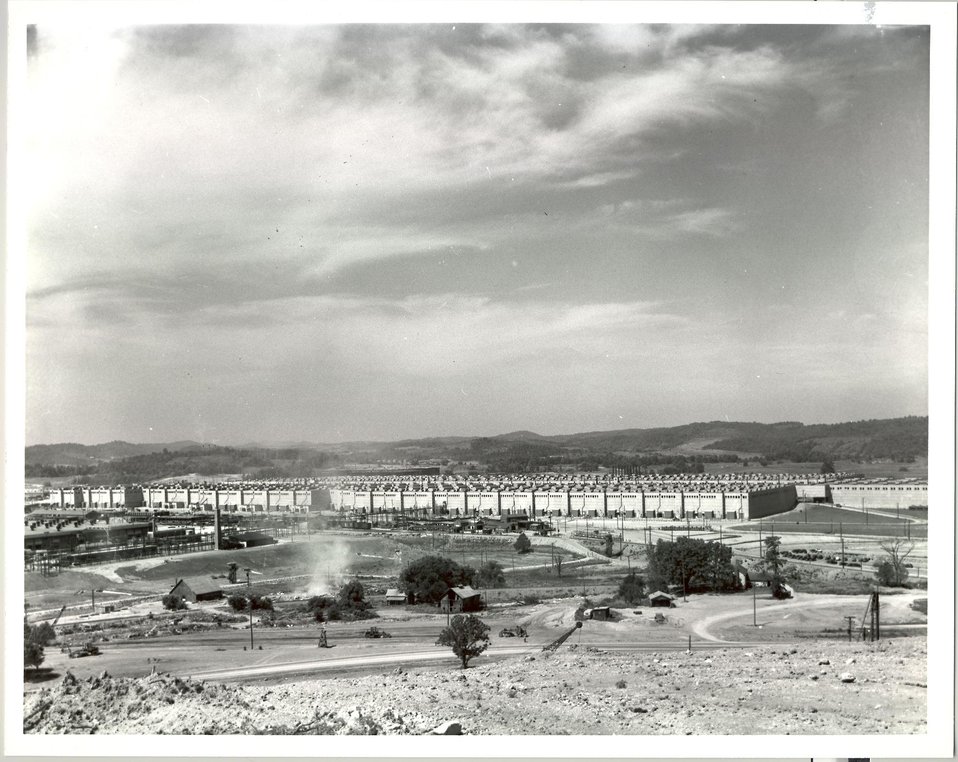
View of K-25 Building Quarry Hill